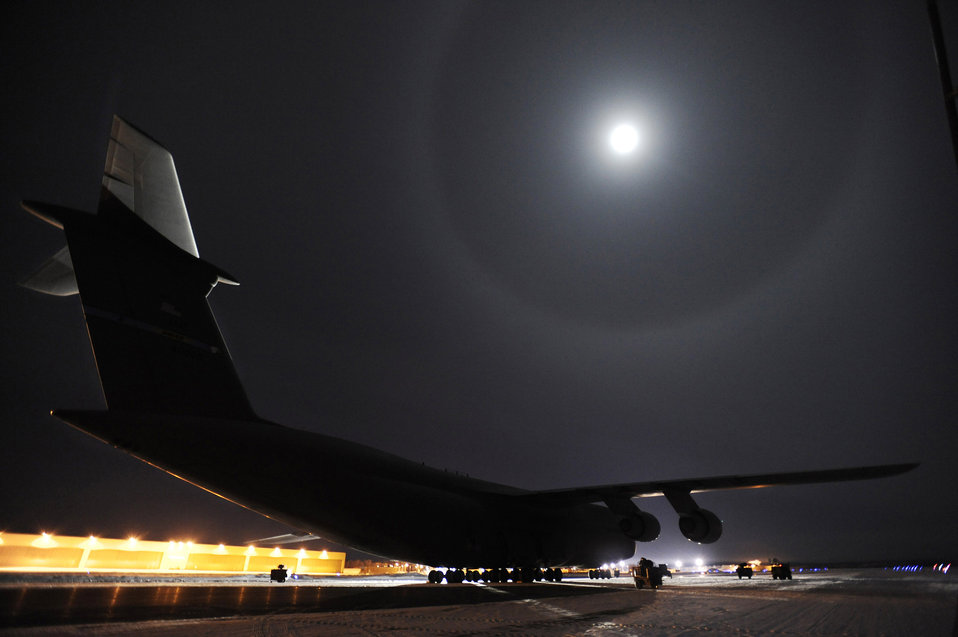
Super Galaxy endures super cold weather

A C-5M Super Galaxy is lit by the largest moon of the year while it sits on the tarmac overnight for a period of 24 hours with temperatures as low as minus 25 degrees during cold weather testing Dec. 12 at Eielson Air Force Base, Alaska. This is the first C-5M with new CF-6 engines, pylons and auxiliary power units, with upgrades to the aircraft's skin and frame, flight controls, landing gear and the pressurization system that went through cold weather testing.